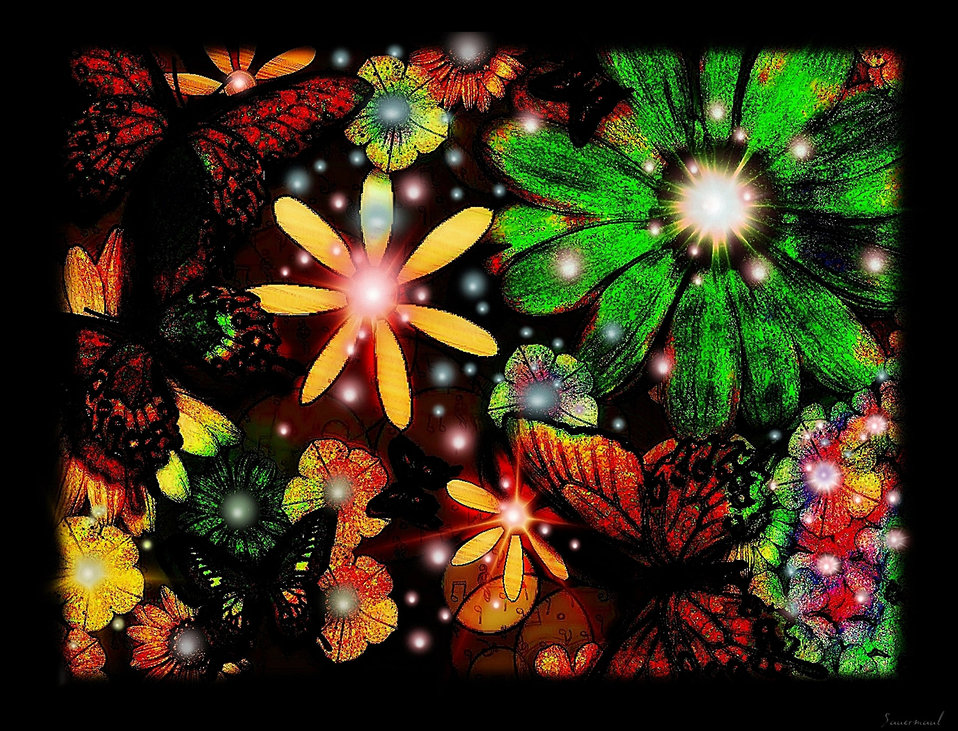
Bright colorful summer night

Background, colored, summer.